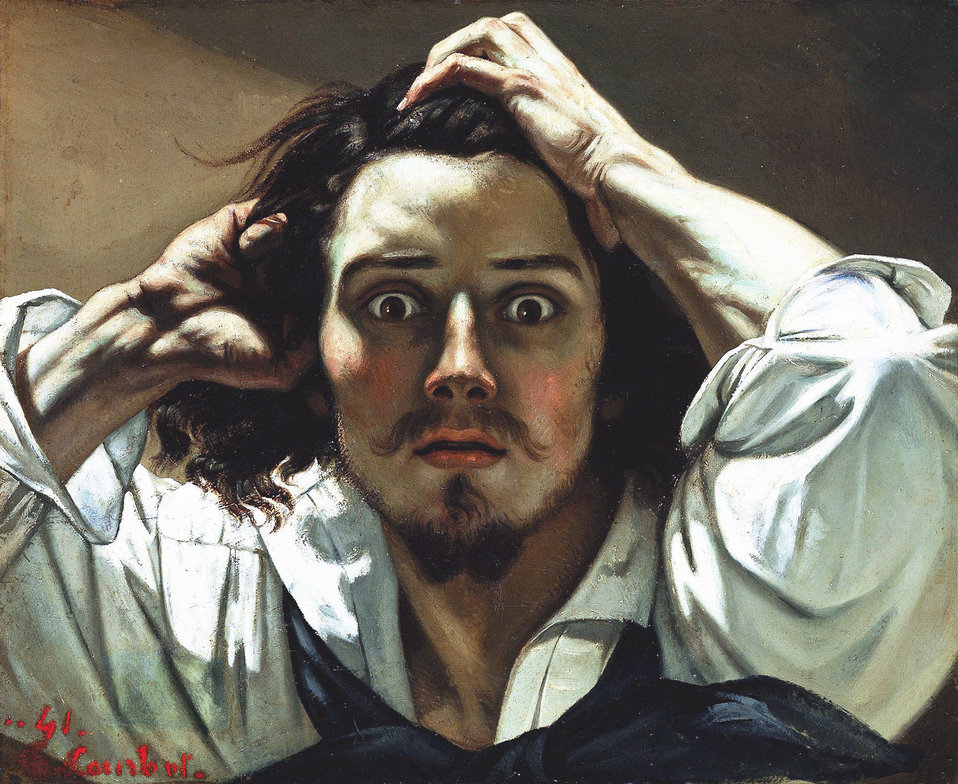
Gustave Courbet - Le Désespéré (1843)